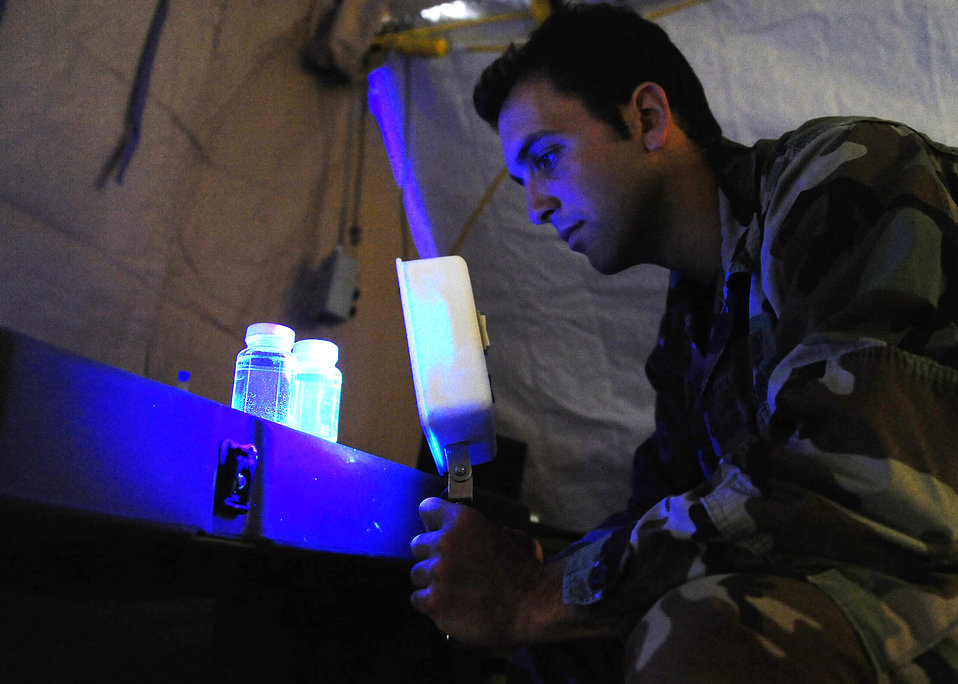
Don't drink the water

Capt. Justin Talarico demonstrates the difference between a clean and a contaminated water sample using a black light at the expeditionary hospital March 18, 2010, in Angol, Chile. He is assigned to 359th Aerospace Medicine Squadron at Randolph Air Force Base, Texas.